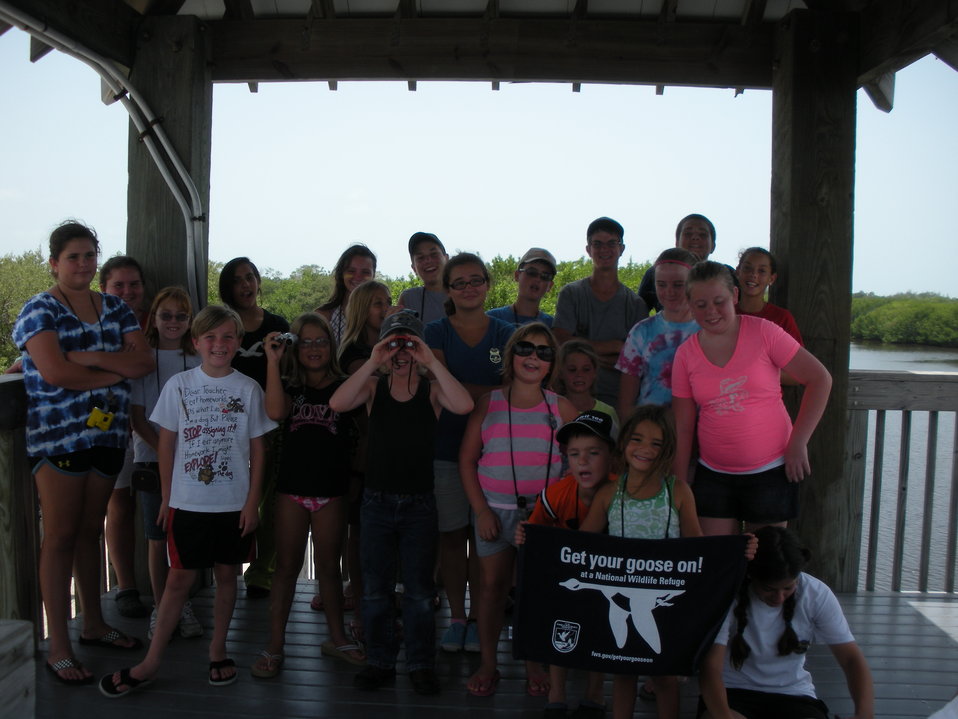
Get Your Goose On!

Taken at Ding Darling National Wildlife Refuge.